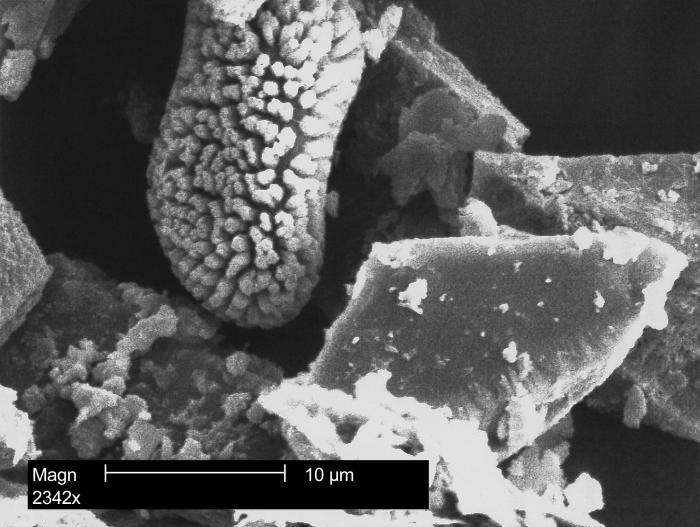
This electron micrograph depicts a morphologic array of pollen granules found on the CDC campus in Atlanta, GA, in spring, 2004.